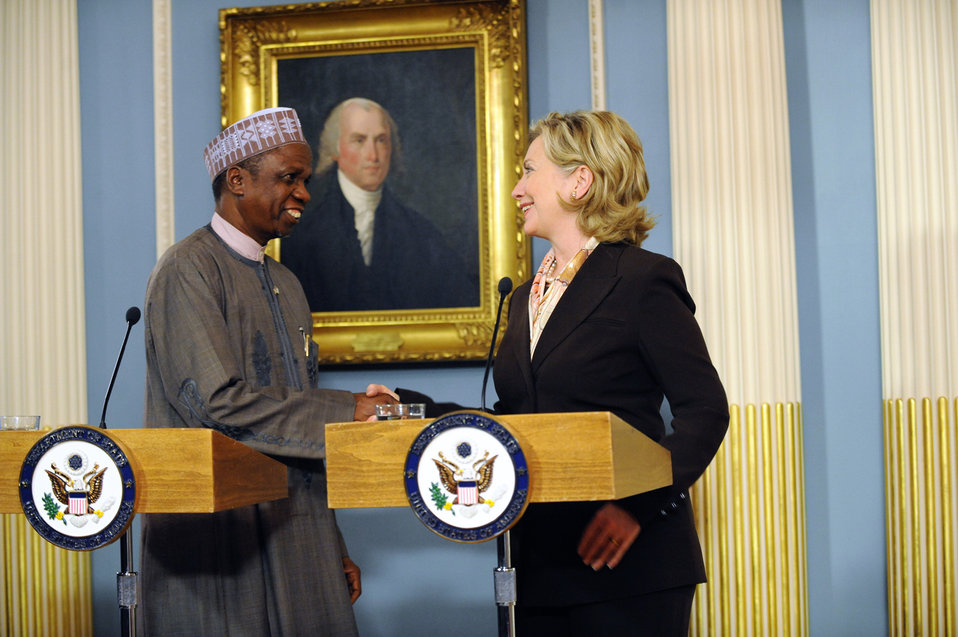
Secretary Clinton Meets With Nigerian Secretary to the Federal Government

U.S. Secretary of State Hillary Rodham Clinton holds a bilateral meeting with Nigerian Secretary to the Federal Government Yayale Ahmed, at the U.S. Department of State in Washington, DC April 6, 2010.